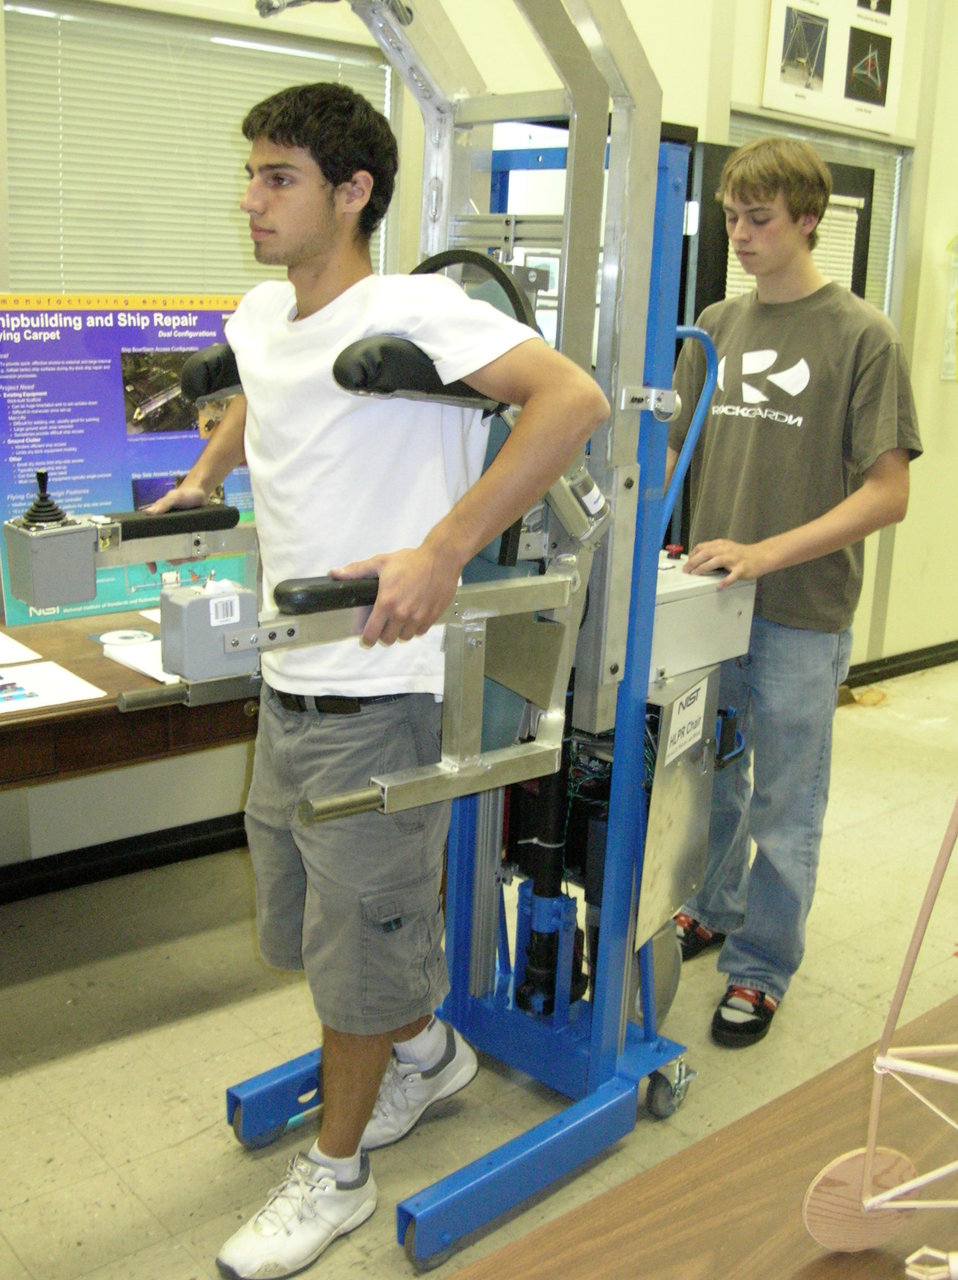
Robot Wheelchair May Give Patients More Independence

NIST research assistants demonstrate one function of the prototype robotic HLPR chair, facilitating leg exercise.